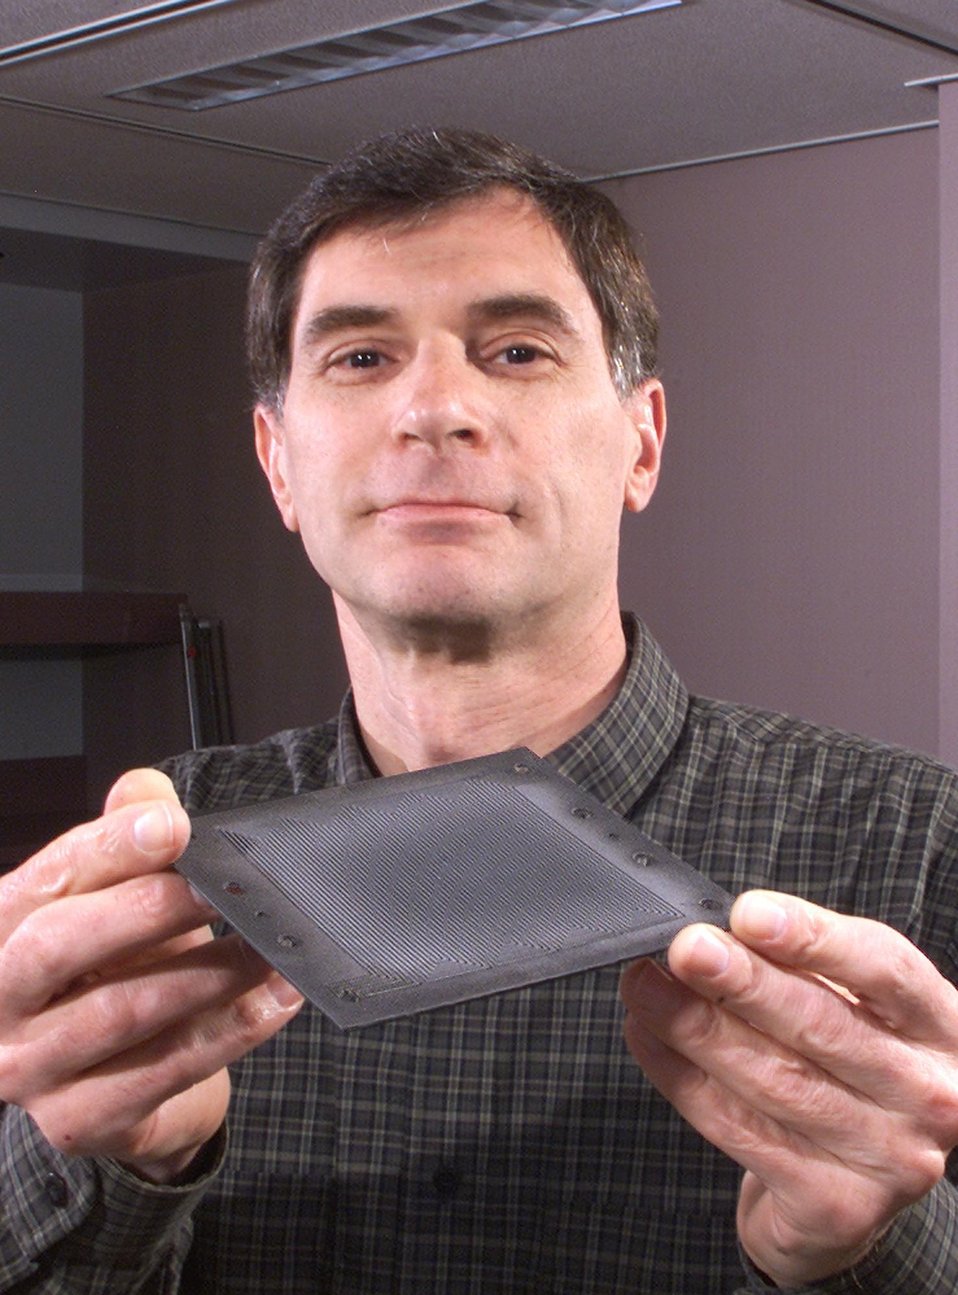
ORNL RESEARCHER DISPLAYS THE CARBON COMPOSITE BIPOLAR PLATE DEVELOPED AT THE LABORATORY.

A BIPOLAR PLATE WHICH IS A KEY COMPONENT OF A PROTON EXCHANGE MEMBRANE FUEL CELL USED TO POWER ADVANCED TECHNOLOGY VEHICLES, IS TRADITIONALLY MADE OF MACHINED GRAPHITE. THIS ORNL DEVELOPED BIPOLAR PLATE IS MADE OF FIBER-ENFORCED CARBON MATERIALS THAT SEPARATE CELLS IN A FUEL CELL AND ACTS AS AN ELECTRODE AND GAS BARRIER, OVERCOMES SIGNIFICANT BARRIERS IN WEIGHT, COST, CORROSION, CONDUCTIVITY AND MANUFACTURING. THE TECHNOLOGY WAS LICENSED TO PORVAIR FUEL CELL TECHNOLOGY.